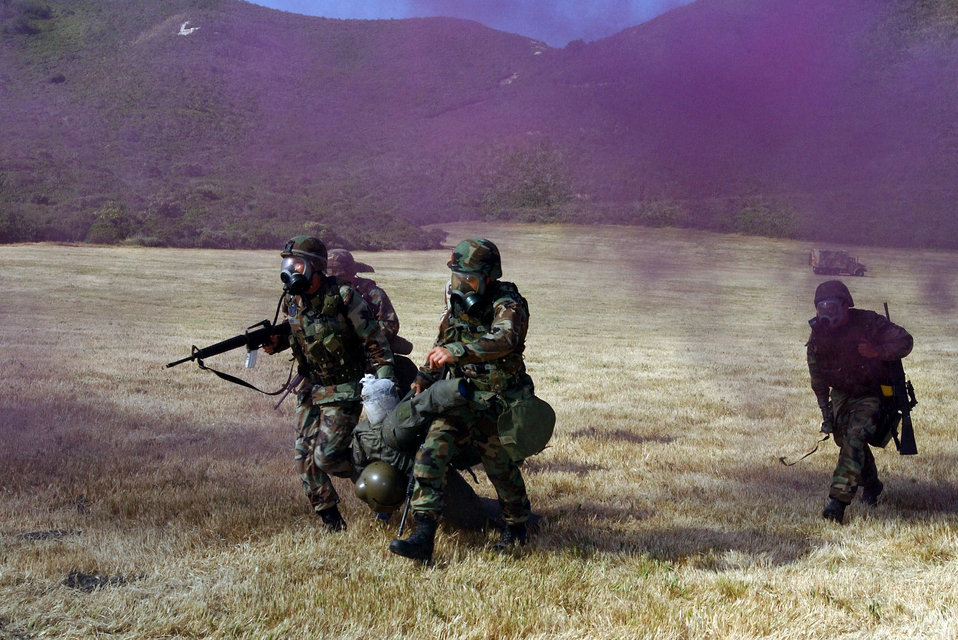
Rescue mission

VANDENBERG AIR FORCE BASE, Calif. -- Members from the 90th Space Wing, F.E. Warren Air Force Base, Wyo. execute a rescue scenario during the marksmanship competition for Guardian Challenge here May 4. Guardian Challenge, the world's premier space and missile competition, is a four-day event held annually. It tests the wartime readiness of Air Force Space Command's Airmen in spacelift, ICBM operations, communications, maintenance, helicopter operations, security forces and chef food preparation.